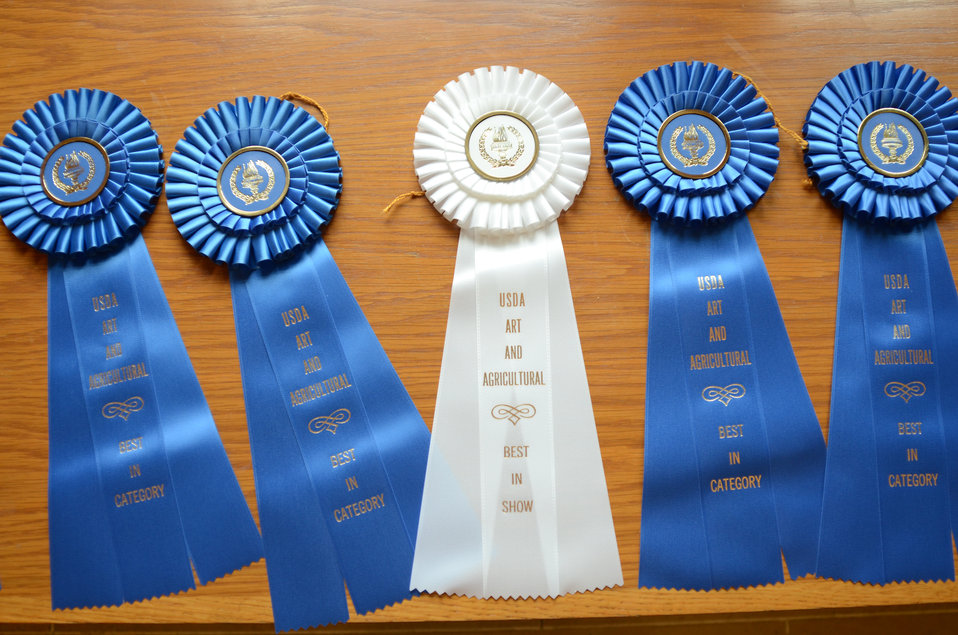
Ribbons presented to the winners of the U.S. Department of Agriculture (USDA) Art and Agriculture competition held in the USDA South Building, Washington, D.C. on Thursday, May 10, 2012.